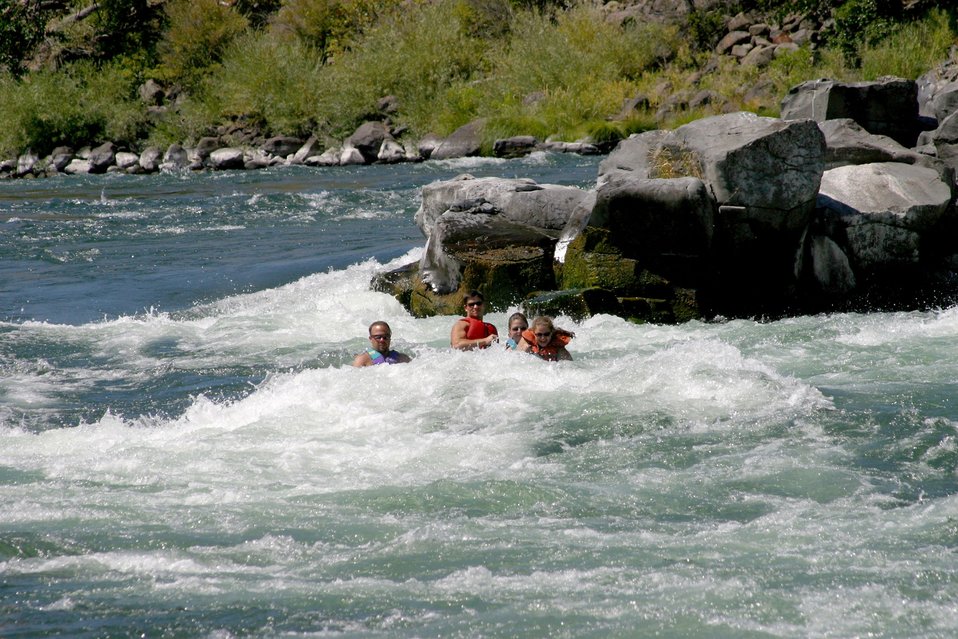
Wapinitia Rapids class III, has large roller coaster waves. 7/26/03 Pelton Dam 3600 cfs: Moody Rapids 4300 cfs.